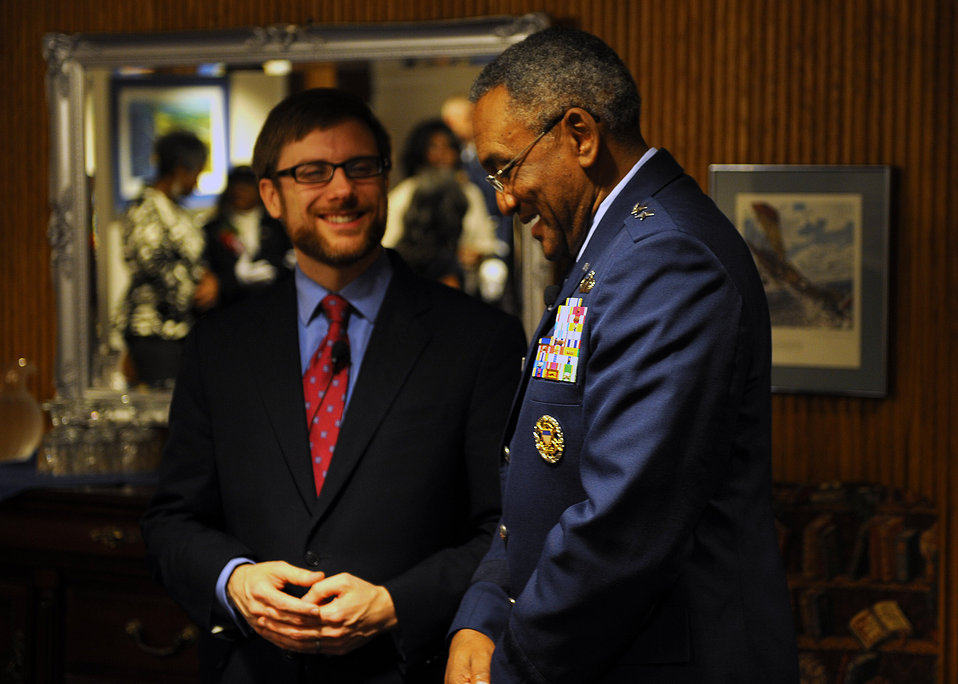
Maj. Gen. Alfred Flowers

Assistant Secretary of the Air Force for Financial Management and Comptroller Dr. Jamie M. Morin shares a few words with Maj. Gen. Alfred K. Flowers before his retirement ceremony Nov. 17, 2011, at Joint Base Anacostia-Bolling, Washington D.C. Flowers has served more than 46 years on active duty and is the longest serving Airman in Air Force history. Flowers is the deputy assistant secretary for budget.